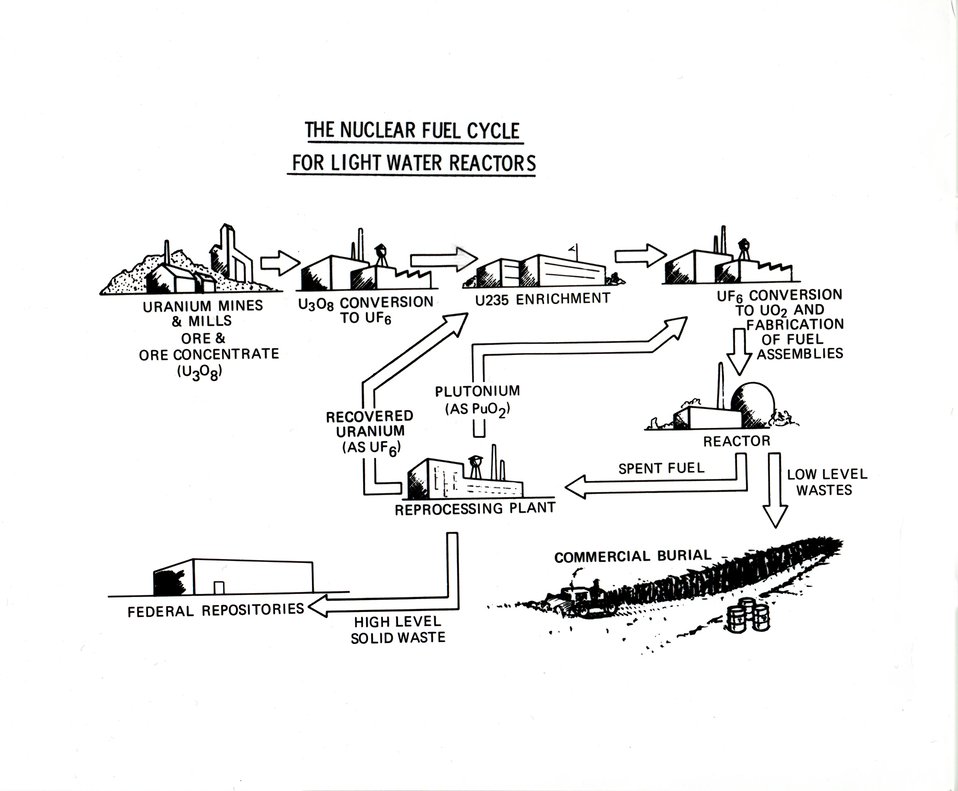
The nuclear fuel cycle includes the mining and milling of uranium, refining of uranium and conversion to uranium hexaflouride, enrichment of the uranium in the isotope uranium-235, conversion of enriched uranium to fuel material, fabrication of reactor fuel elements, use of fuel elements in nuclear power plants, chemical reprocessing of spent fuel to obtain reusable fuel material, recovery and marketing of plutonium and other byproducts, and disposal of radioactive wastes. c. 1974